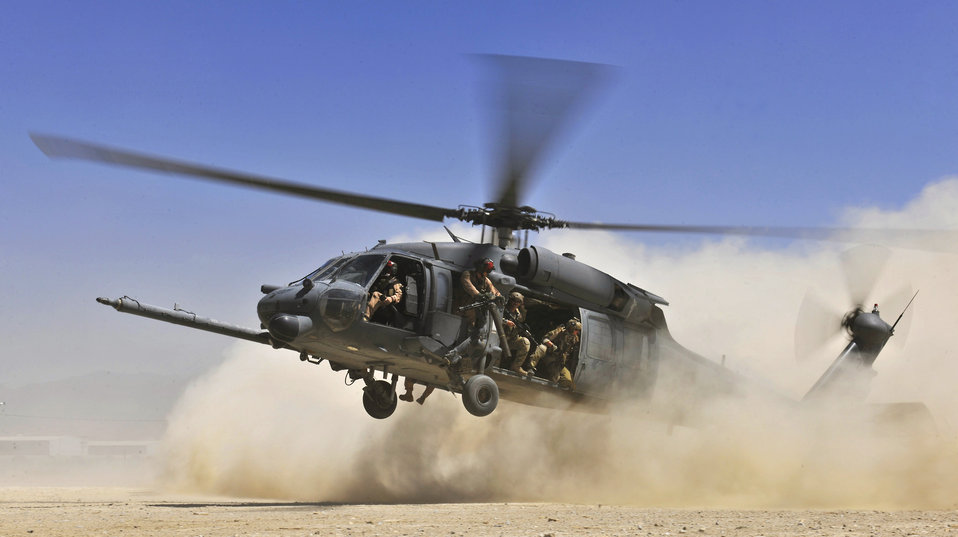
Get ready to go

An HH-60G Pave Hawk helicopter carrying combat search and rescue Airmen approaches a landing zone during an exercise at Bagram Airfield, Afghanistan, Aug. 21. 2010. The exercise tested the rescue squadron's ability to provide medical aid to U.S. and coalition forces.